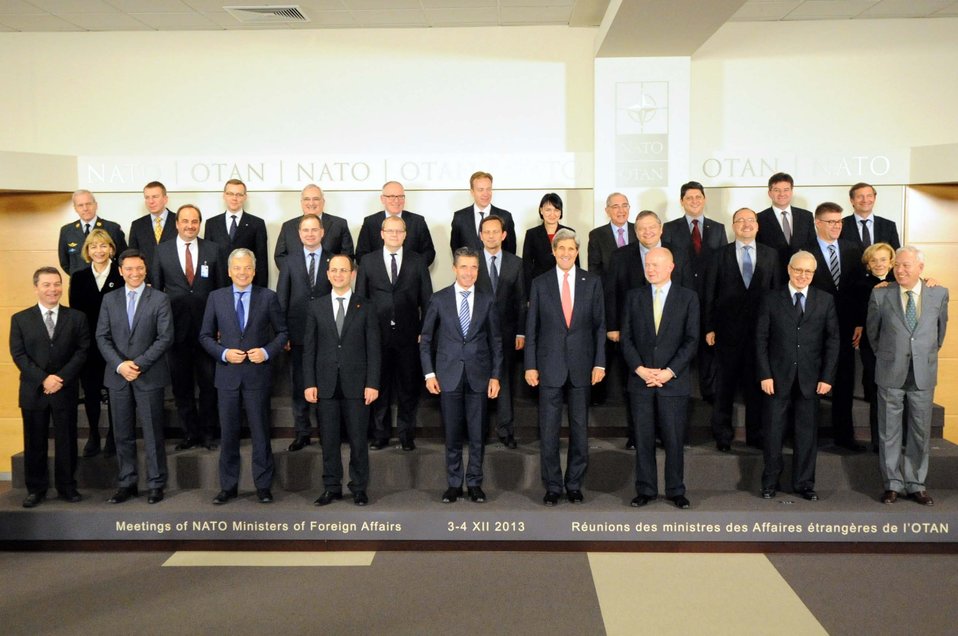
Secretary Kerry and NATO Secretary General Rasmussen Pose During a Group Photo of NATO Foreign Ministers

U.S.Secretary of State John Kerry, front center right, and NATO Secretary General Anders Fogh Rasmussen, center, pose during a group photo of NATO foreign ministers and other representatives at NATO headquarters in Brussels, Belgium, on December 3, 2013.